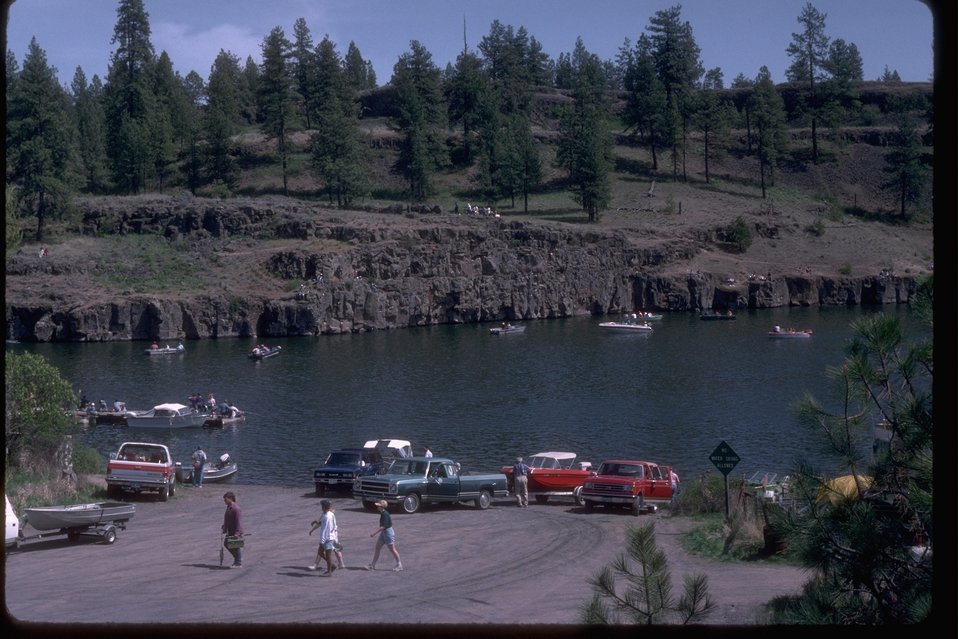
First day of fishing season at Fishtrap Lake, Lincoln County, Washington